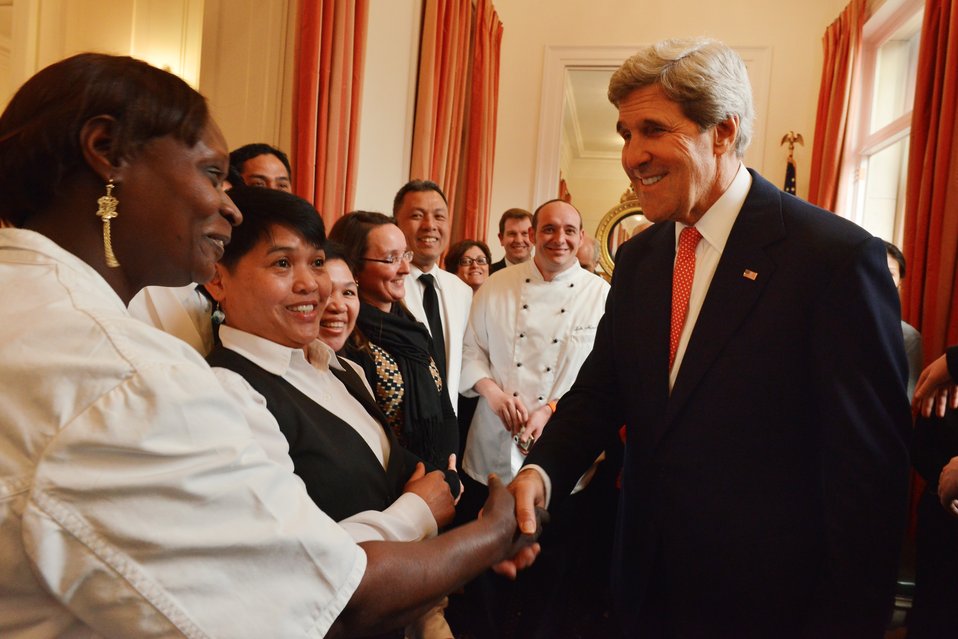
Secretary Kerry Shakes Hands With the Staff and Families of Tri-Mission Brussels

U.S. Secretary of State John Kerry shakes hands with the staff and families of Tri-Mission Brussels at the U.S. Ambassador's residence on April 22, 2013.